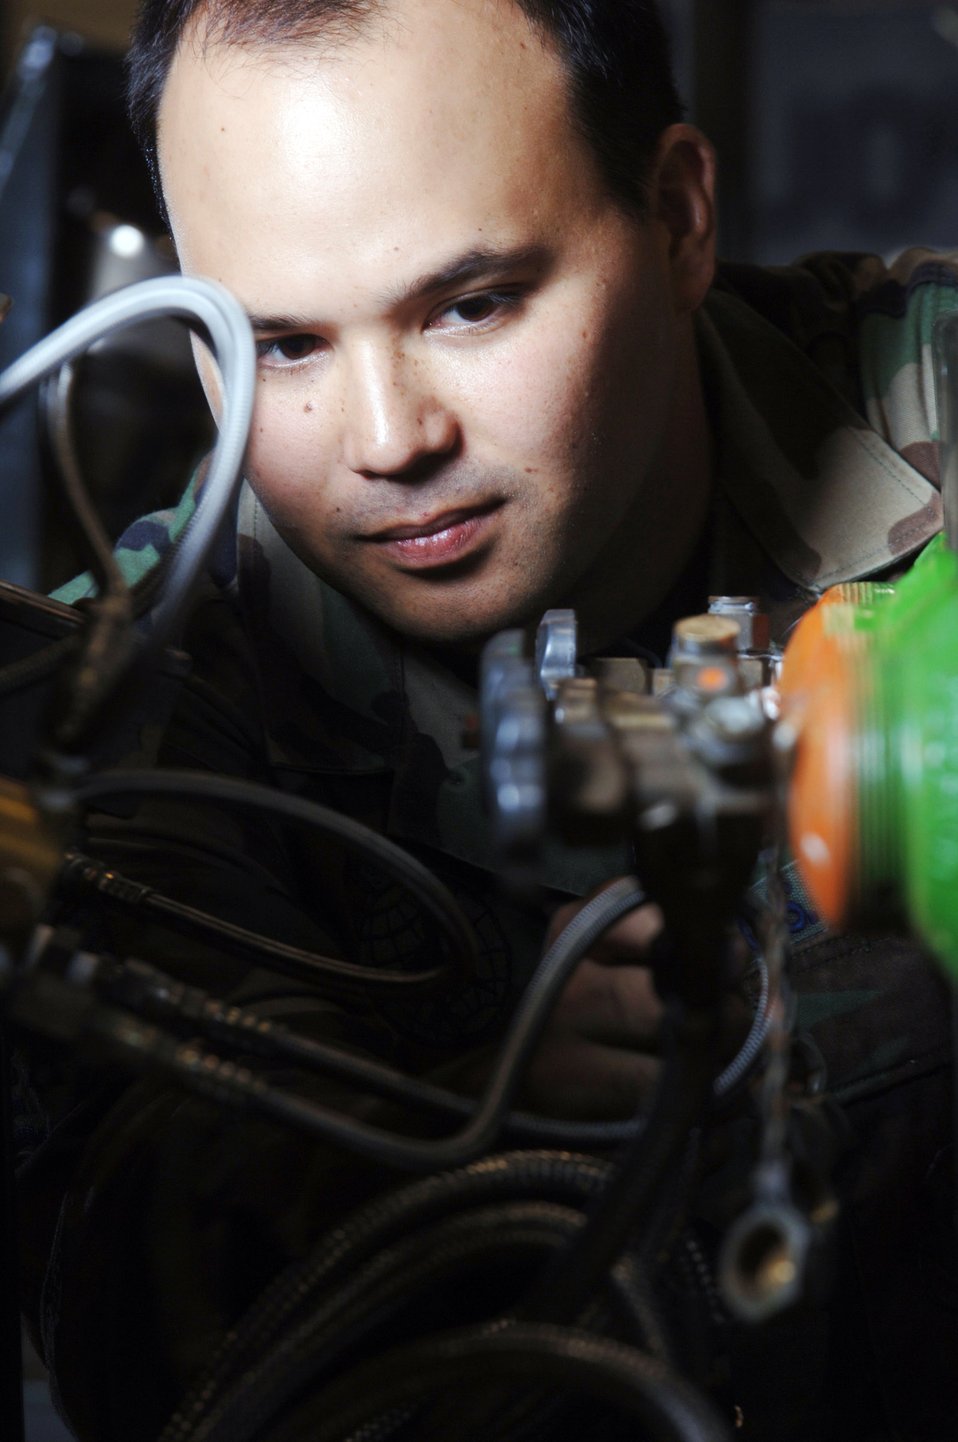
Quality care

Staff Sgt. Grant Mimay performs a quality verification inspection on a gaseous oxygen cart here. During an inspection, Sergeant Mimay looks for corrosions, leaks and cracks on oxygen lines, valves and fittings. His flight also repairs aircraft life raft inflation devices, small oxygen cylinders and batteries. Sergeant Mimay is an electro and environmental technician from the 374th Maintenance Squadron.